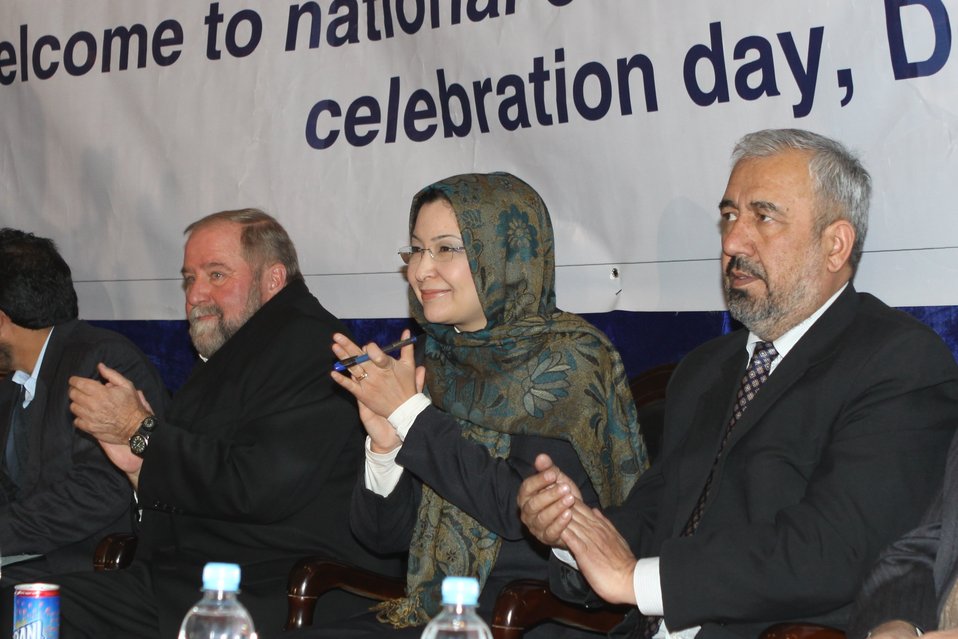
Community Health Workers Celebrated

Kabul, Afghanistan | December 5, 2010 — In support of the United Nations designated International Volunteer Day for Economic and Social Development, Afghanistan’s Ministry of Public Health celebrated its annual Community Health Worker Day today. Acting Minister of Public Health Dr. Suraya Dalil, USAID Senior Deputy Mission Director Robert Hellyer, other government officials, and international donors joined in recognizing the critical contribution of community health workers in Afghanistan and encouraging them to continue their voluntary support to their communities.
The event praised the contributions of the more than 22,000 volunteers throughout the country who deliver community level health-education, counseling, and services out of village health posts located in private homes. The Ministry of Public Health envisioned that community-based healthcare programs will actively encourage communities and families to adopt healthy lifestyles and behaviors, and provide families access to high quality and socially acceptable preventative medicine and life-saving services.
“We have 22,000 community health workers in Afghanistan that are able to implement the basic and standard medicines. They all have been trained through a job description,” said Minister Dalil. Addressing the health workers, she added, “I am proud and feel powerful that I have people like you.”
USAID-funded health projects collaborate closely with the Ministry of Public Health to improve the health and nutritional status of Afghans, provide quality primary healthcare, and promote healthy behaviors at the community and household-levels. USAID supported the training of more than 9,000 of the volunteer community health workers currently working in Afghanistan.
“On behalf of the American people, I congratulate the Community Health Workers for their diligence to gain the skills and knowledge necessary to serve their communities in this important role,” said USAID Senior Deputy Mission Director Hellyer. “USAID strongly supports community based health care and believes that quality community-based health services are essential to reaching Afghanistan’s Millennium Development Goals.”
To support the Basic Package of Health Services, USAID assisted in developing the community health worker training manual, helped train community health worker supervisors and master-trainers, facilitated in-service training, and produced and developed reporting tools, job aids, and education materials.